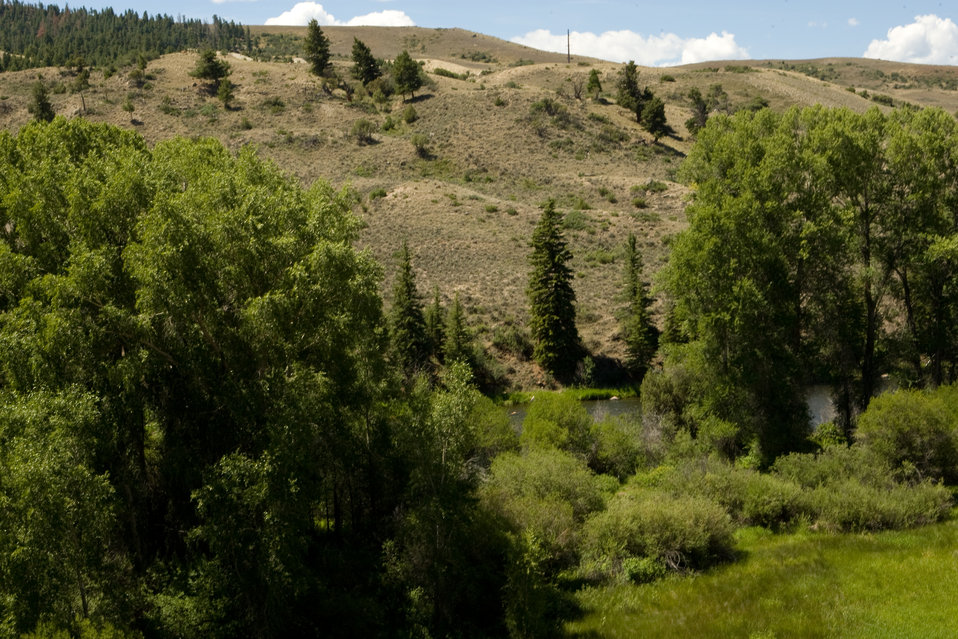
Colorado Rare Plant Conservation Initiative

The Colorado Rare Plant Conservation Initiative (RPCI) is a partnership of 23 statewide and regional agencies, private organizations, and academic institutions working to conserve 121 rare plants in Colorado. As part of these efforts the group developed the Colorado Rare Plant Conservation Strategy, developed Best Management Practices to reduce energy development impacts, addressed climate change, and developed focused strategies for the conservation of individual species at eight priority landscapes. The group has also worked to coordinate volunteer efforts for plant conservation across the state.